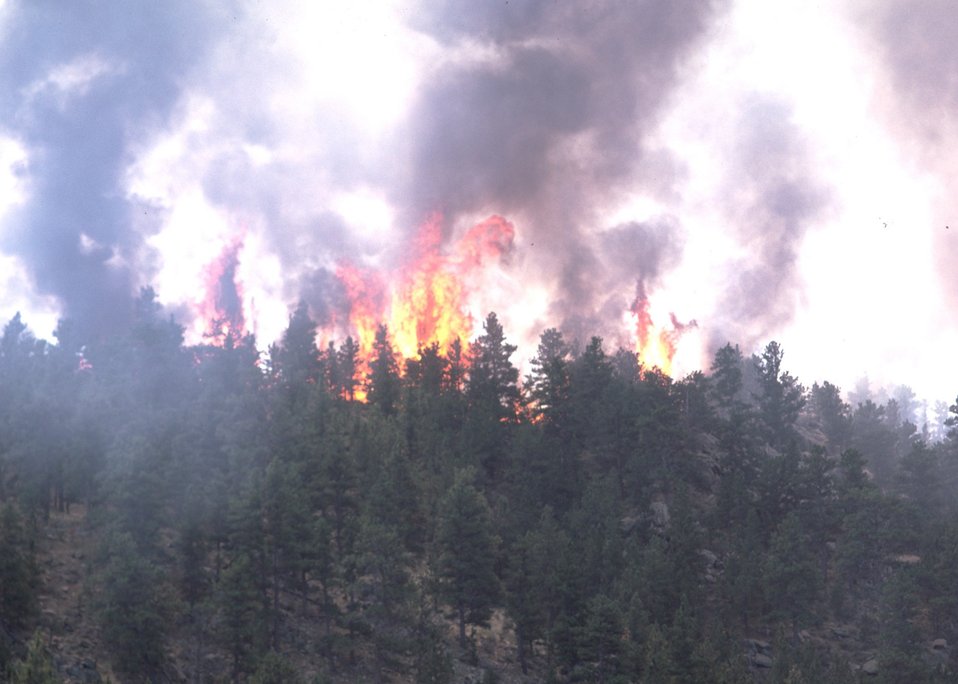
A wildfire in a unknown forest area.